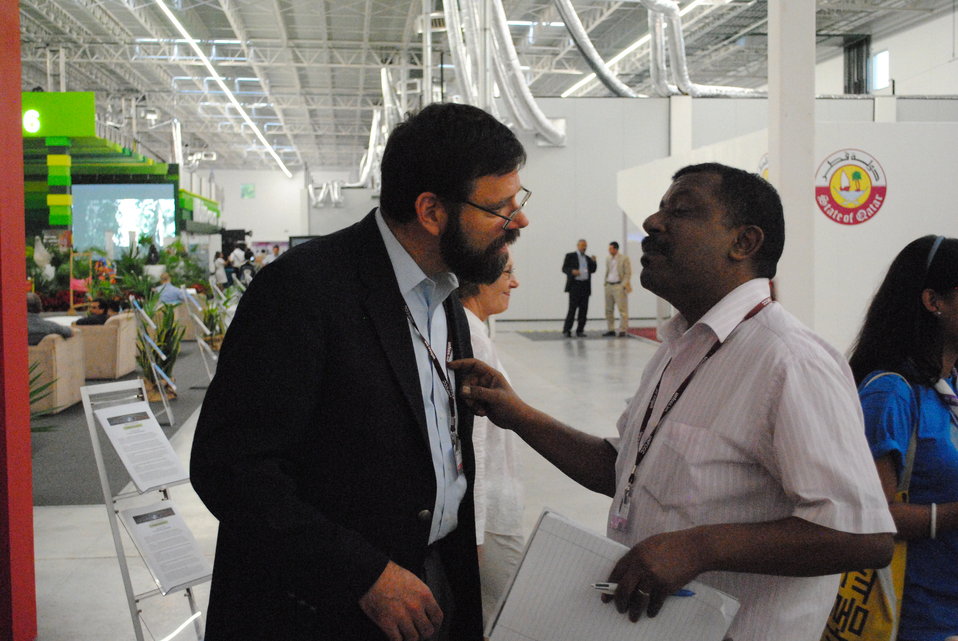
Deputy Special Envoy Pershing Speaks With a Member of the Audience

A member of the audience speaks with U.S. Deputy Special Envoy for Climate Change Jonathan Pershing after the side event, Enhancing Capacity for Low Emission Development Strategies, at the U.S. Center at COP-16 in Cancun, Mexico, on December 2, 2010.